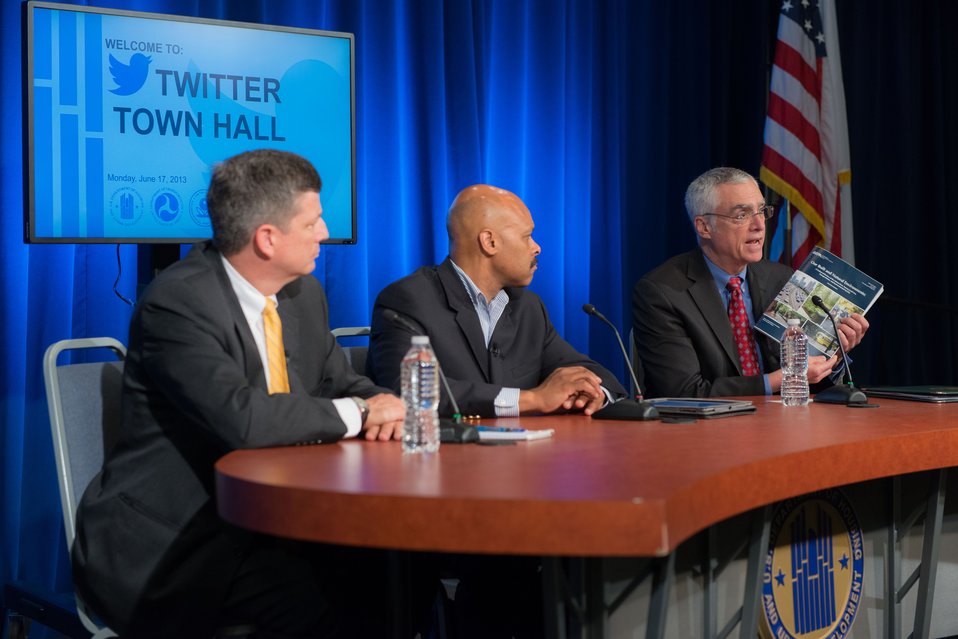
Acting Administrator Bob Perciasepe at Twitter Town Hall

EPA Acting Administrator Bob Perciasepe introduces new EPA publication, Our Built and Natural Environments.
USEPA Photo by Eric Vance. Public domain image